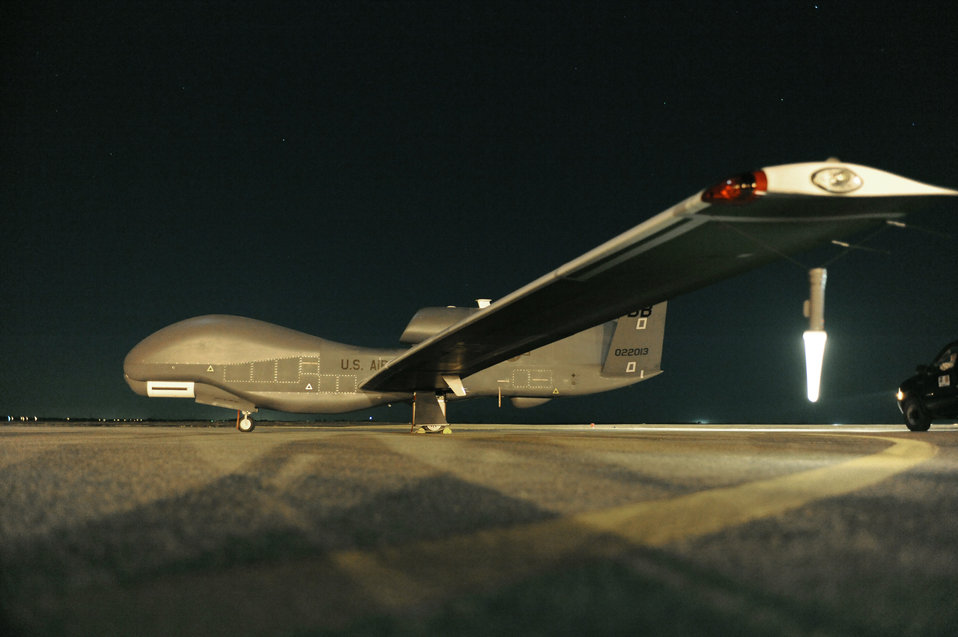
1st Global Hawk lands in Guam

An RQ-4 Global Hawk sits on the runway before beginning a nighttime mission. The aircraft is unmanned, and is used to capture imagery from high altitudes.